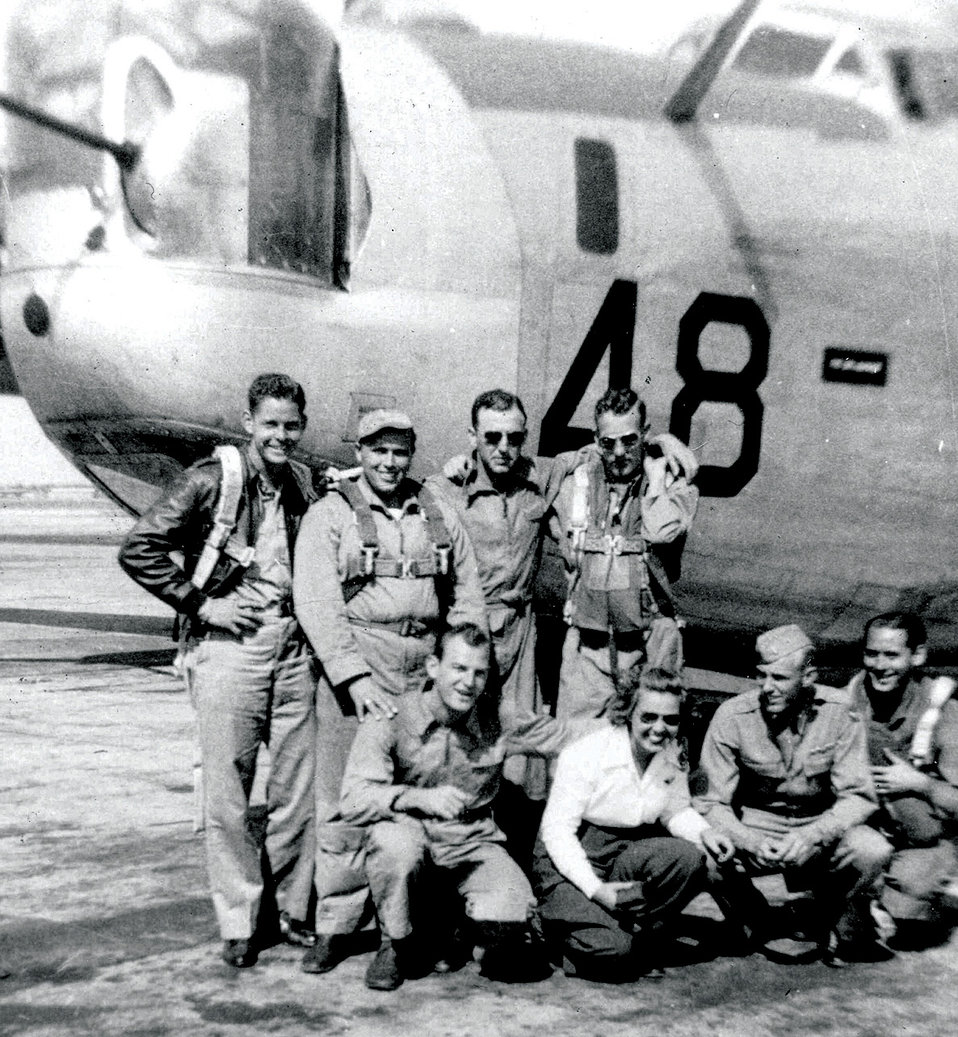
WASP recalls her World War II experiences

Deanie Parrish (bottom row, center) poses with other pilots during the early 1940s. As a WASP, she wanted to show that women could fly like any